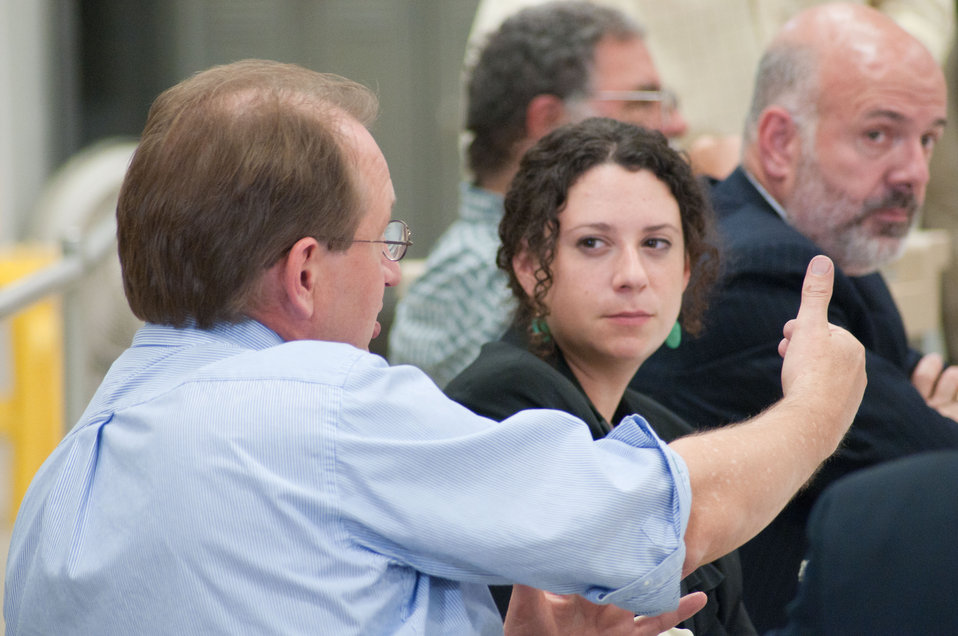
Center for Rural Affairs' Chuck Hassebrook (left) speaks to Farm Aid's Alicia Harvie (center); University of Tennessee Joe DiPietro (right); other stakeholders; and U.S. Department of Agriculture Secretary and chair of the White House Rural Council, Tom Vilsack, during a meeting at the Northeast Iowa Community College, IA, for the White House Rural Economic Forum, on Tuesday, August 16, 2011.